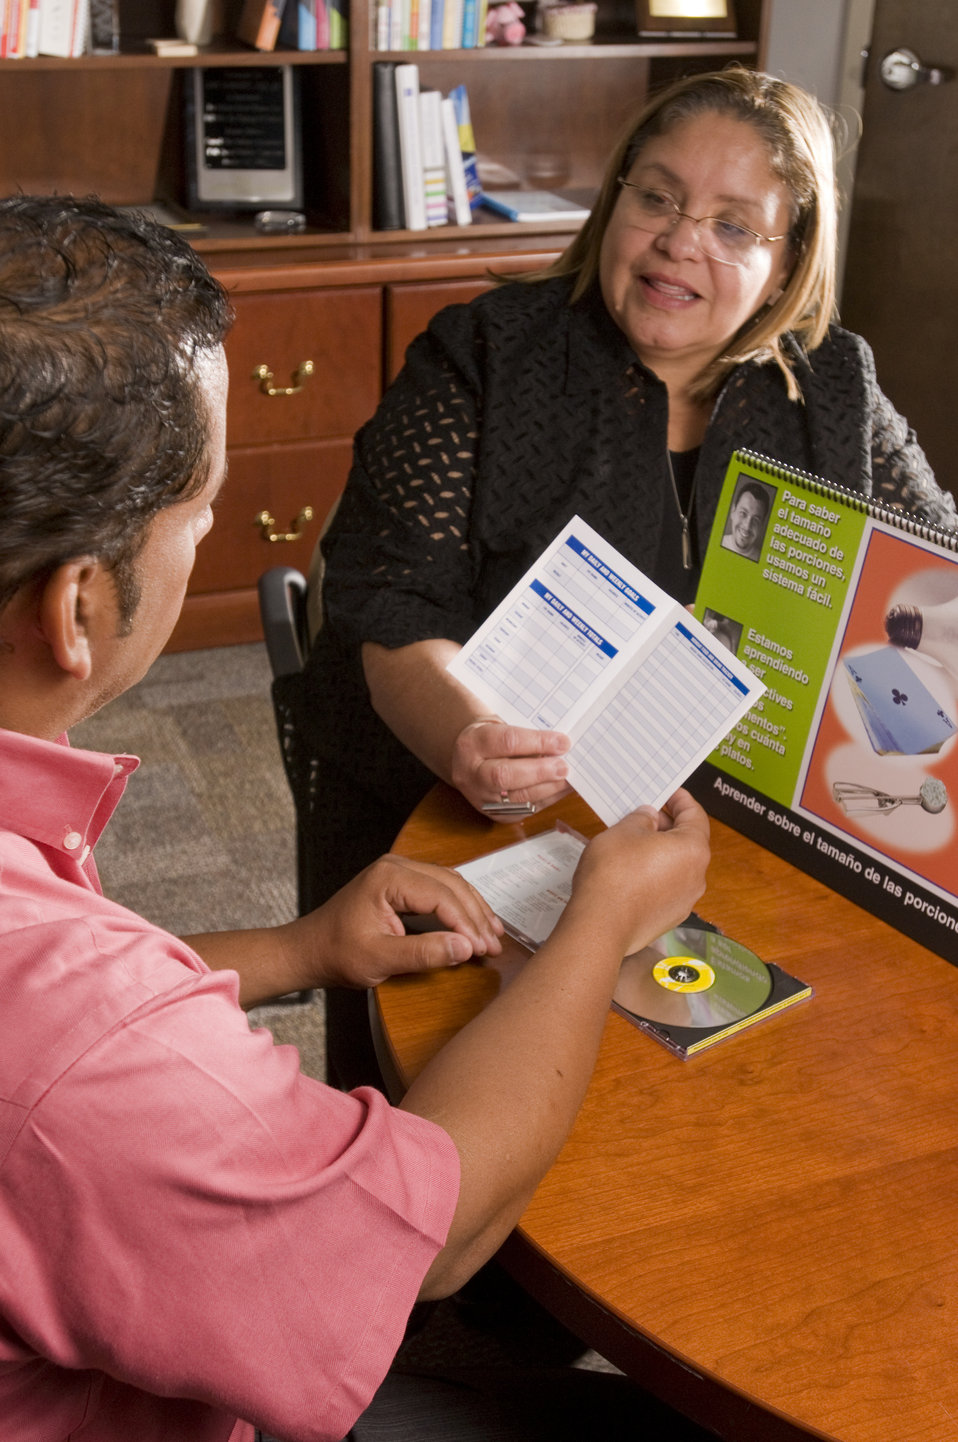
This image depicts a man with diabetes in the foreground listening to a community health worker familiar with the necessary proactive approach one must implement in order to maintain control over the detrimental effects of this disease. The health worker was providing answers to questions posed by the patient regarding actions he'd need to take, enabling him to lead a healthy, active life with diabetes. She was referencing the Spanish version of a National Institutes of Health educational flip-chart entitled, 'El camino hacia la buena salud', which translated into English means, 'The Road to Health'.